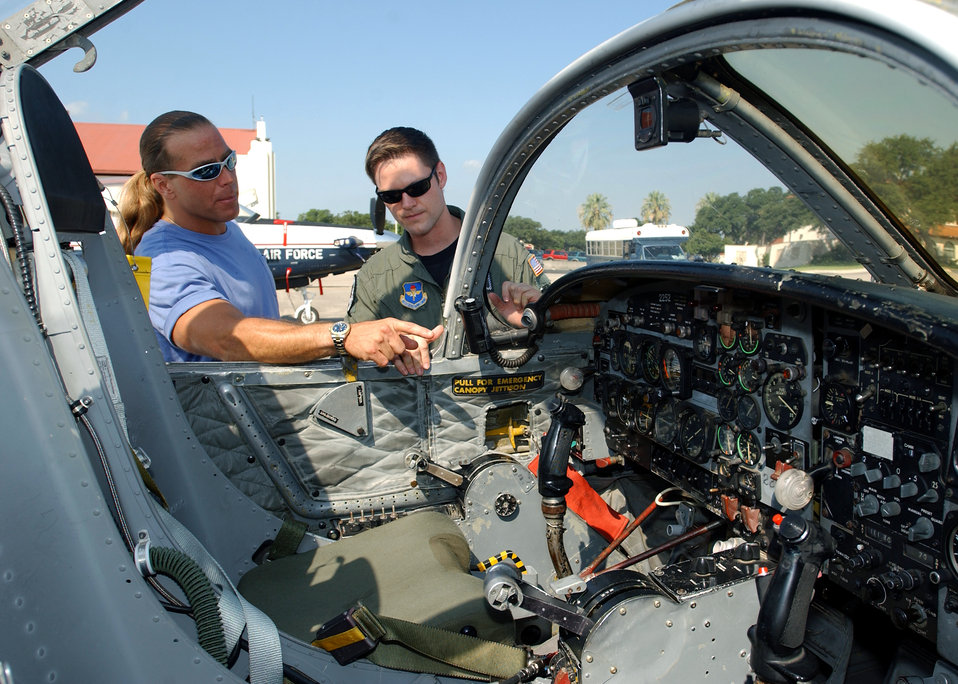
A wrestler in the cockpit

RANDOLPH AIR FORCE BASE, Texas (AFPN) -- Capt. Matt Gehrke shows professional wrestler Shawn Michaels the cockpit of a T-37 Tweet. The wrestler, who spent a portion of his childhood here, toured the base Aug. 4. Captain Gehrke is assigned to the 559th Flying Training Squadron.